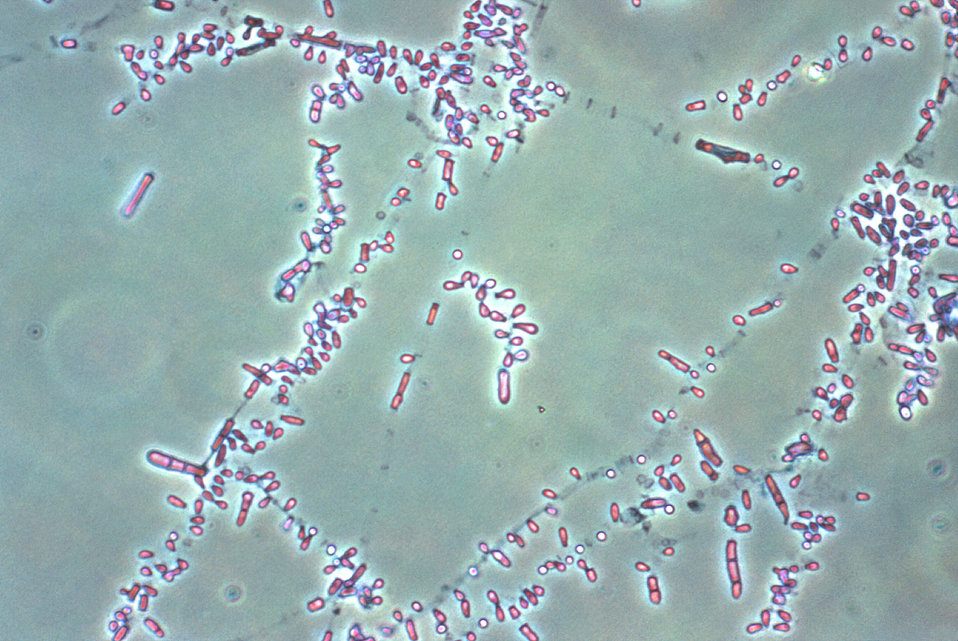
This photomicrograph revealed some of the ultrastructural morphology exhibited by Trichophyton rubrum fungal organisms.